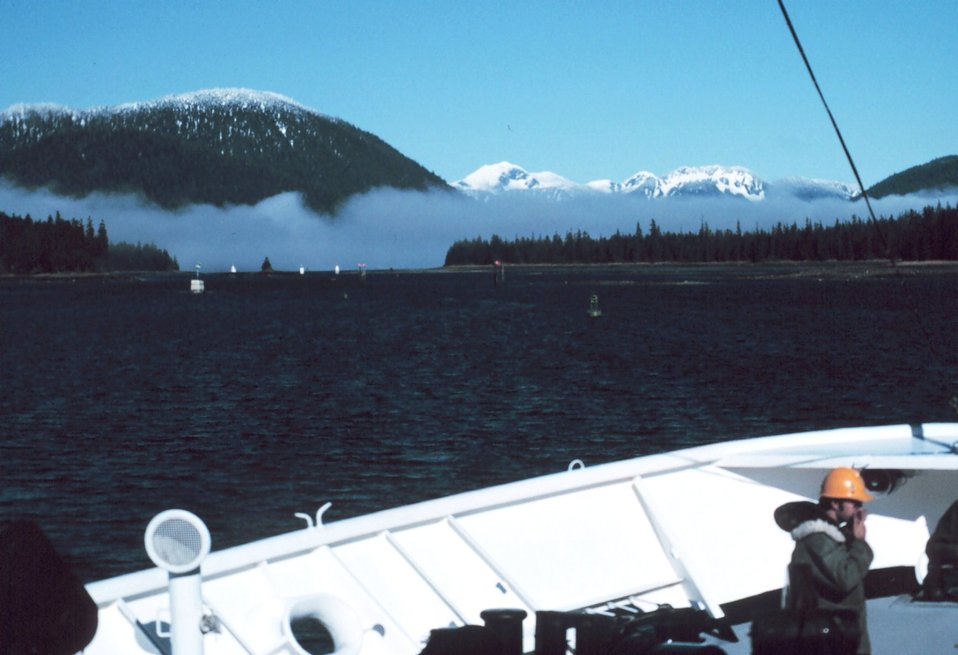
Wrangell Narrows